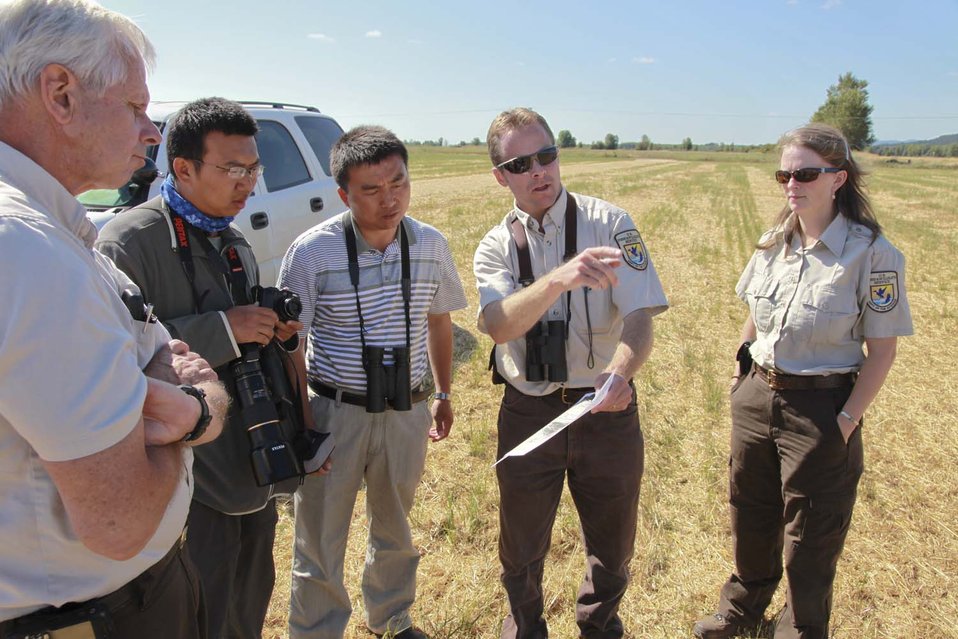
William L. Finley National Wildlife Refuge